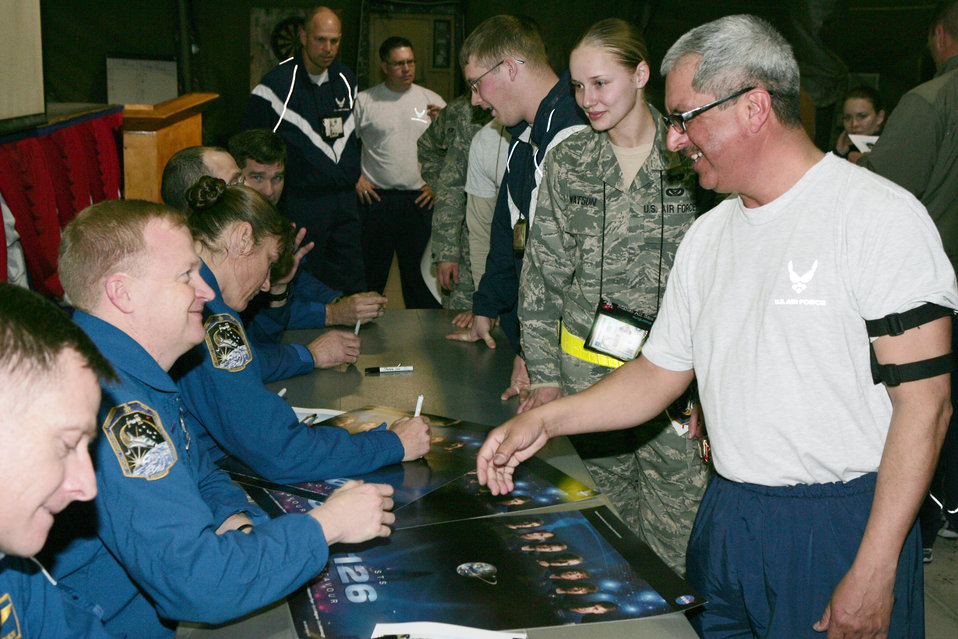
NASA astronauts touch down at Manas Air Base, Kyrgyzstan

The crew of NASA's Space Shuttle Endeavour STS-126 mission sign autographs for and visit with Airmen during their visit to Manas Air Base, Kyrgyzstan, Jan. 28. The visit marked the first time NASA astronauts have toured the deployed area of operations after a mission.